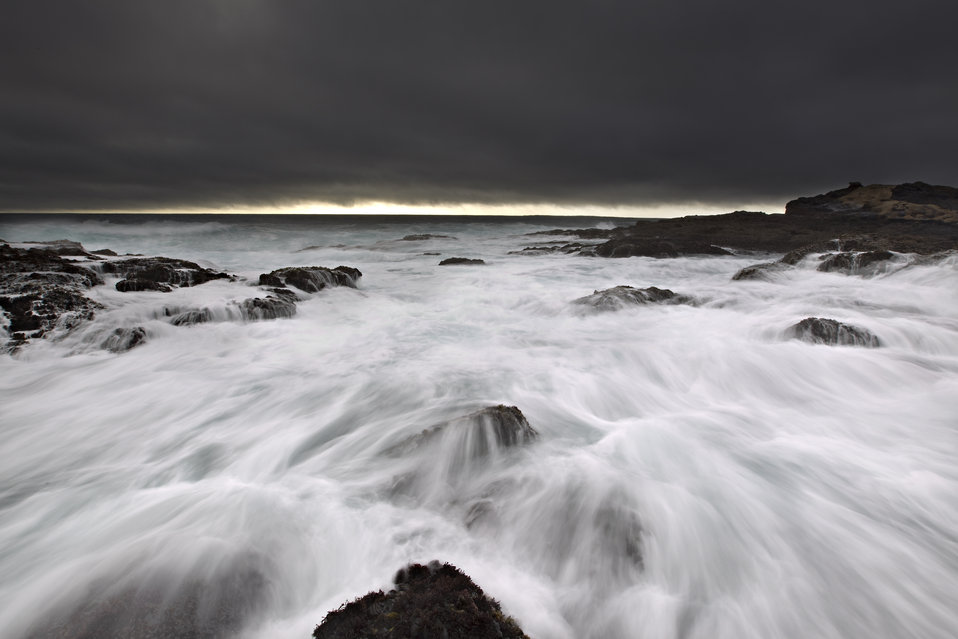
Central California Coast